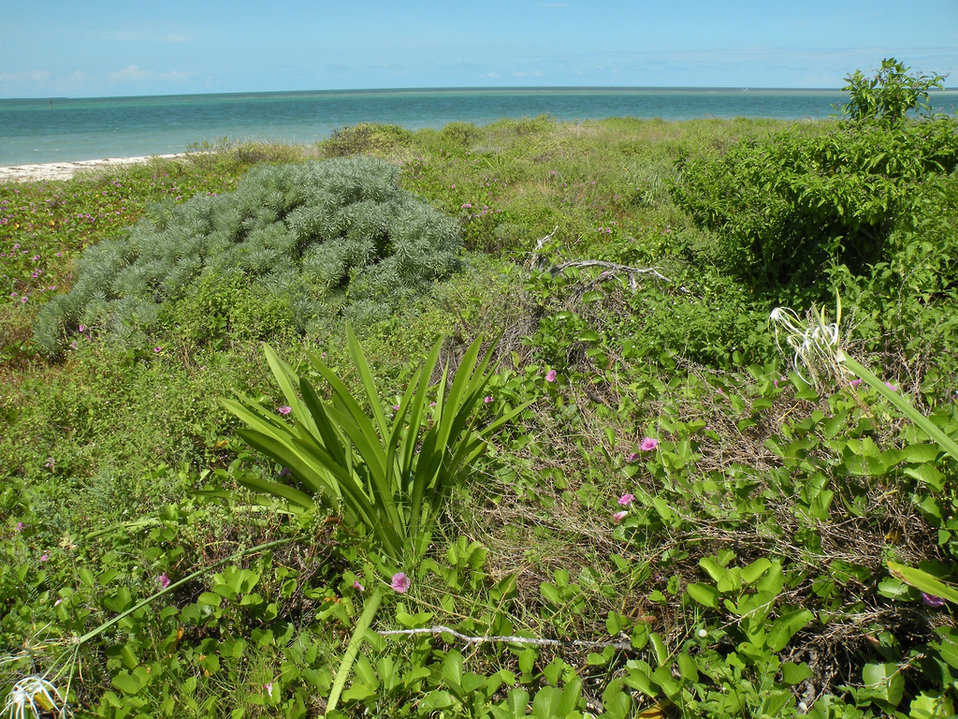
Key West National Wildlife Refuge, FL